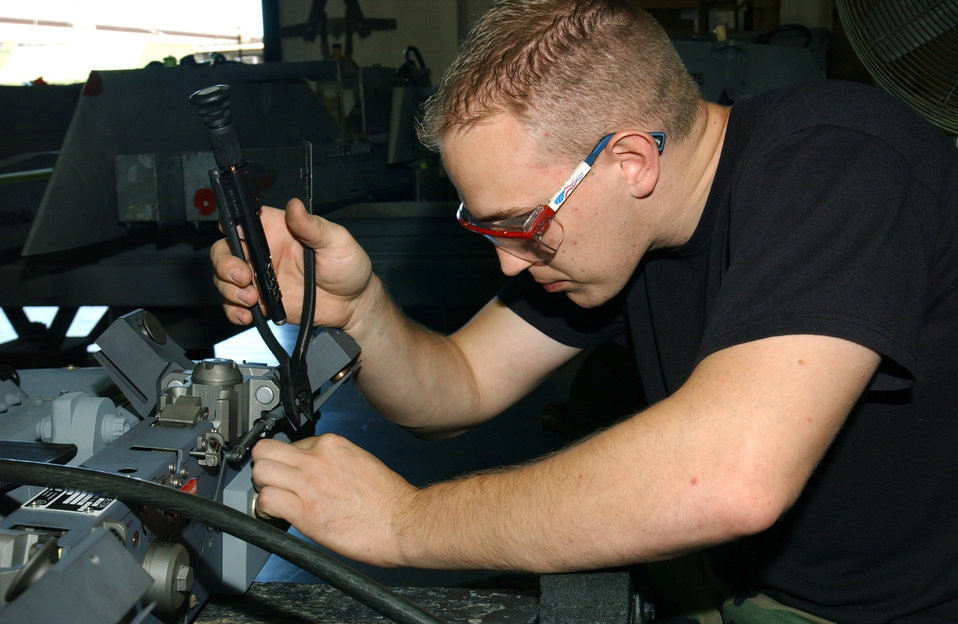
Function checks

SHAW AIR FORCE BASE, S.C. -- Airman 1st Class Narley Wright performs a safety wiring functional check on a bomb release unit here recently. Airman Wright is assigned to the 20th Equipment Maintenance Squadron.